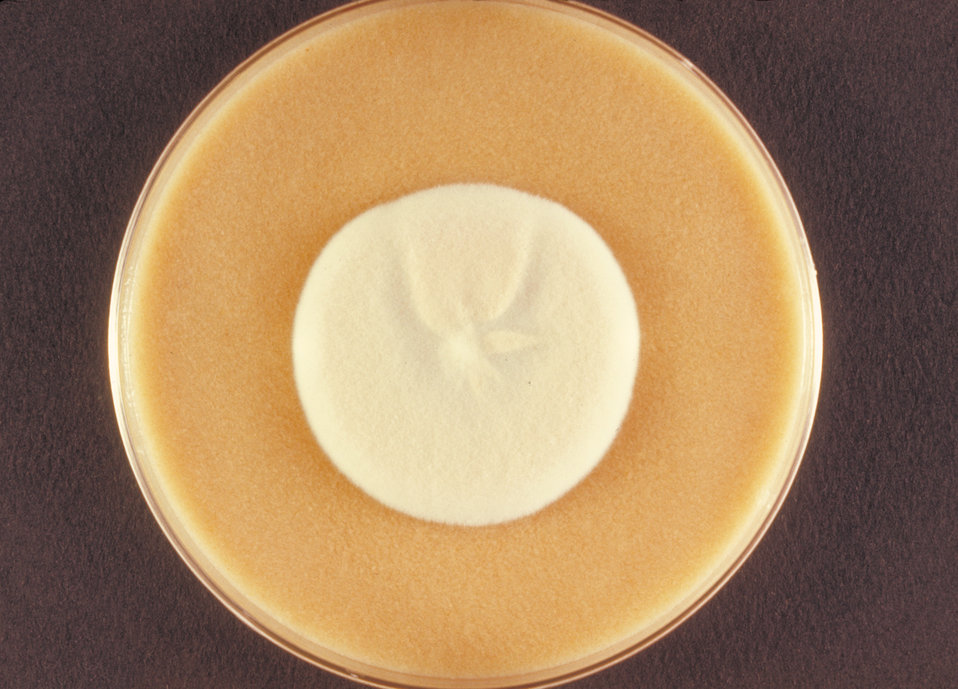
This is a top view of a cereal agar plate culture of a Microsporum persicolor fungal colony.